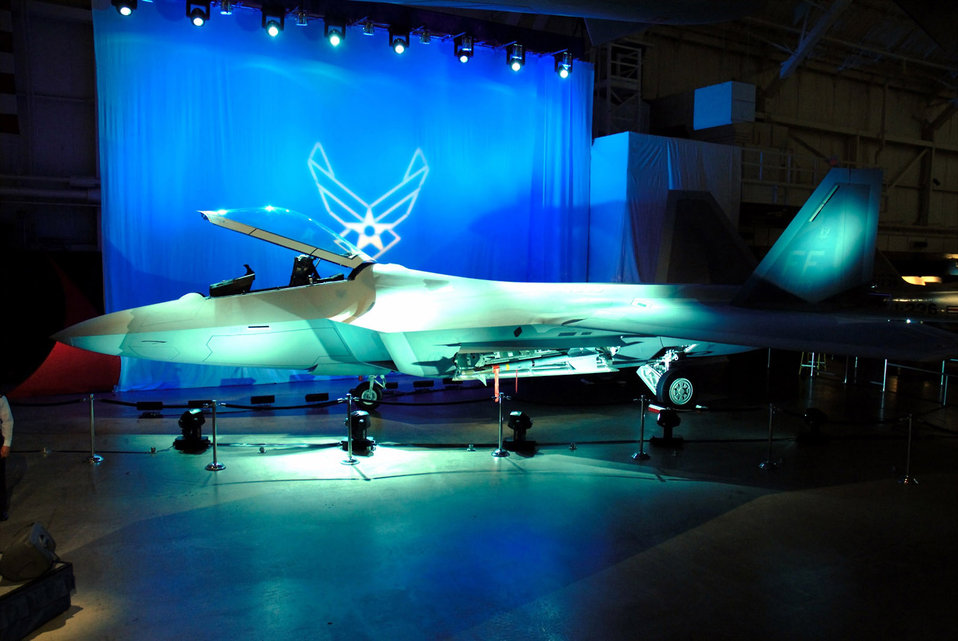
Museum unveils F-22 public display

The F-22 Raptor is unveiled at its exhibit opening ceremony at the National Museum of the U.S. Air Force Jan. 18 at Dayton, Ohio.